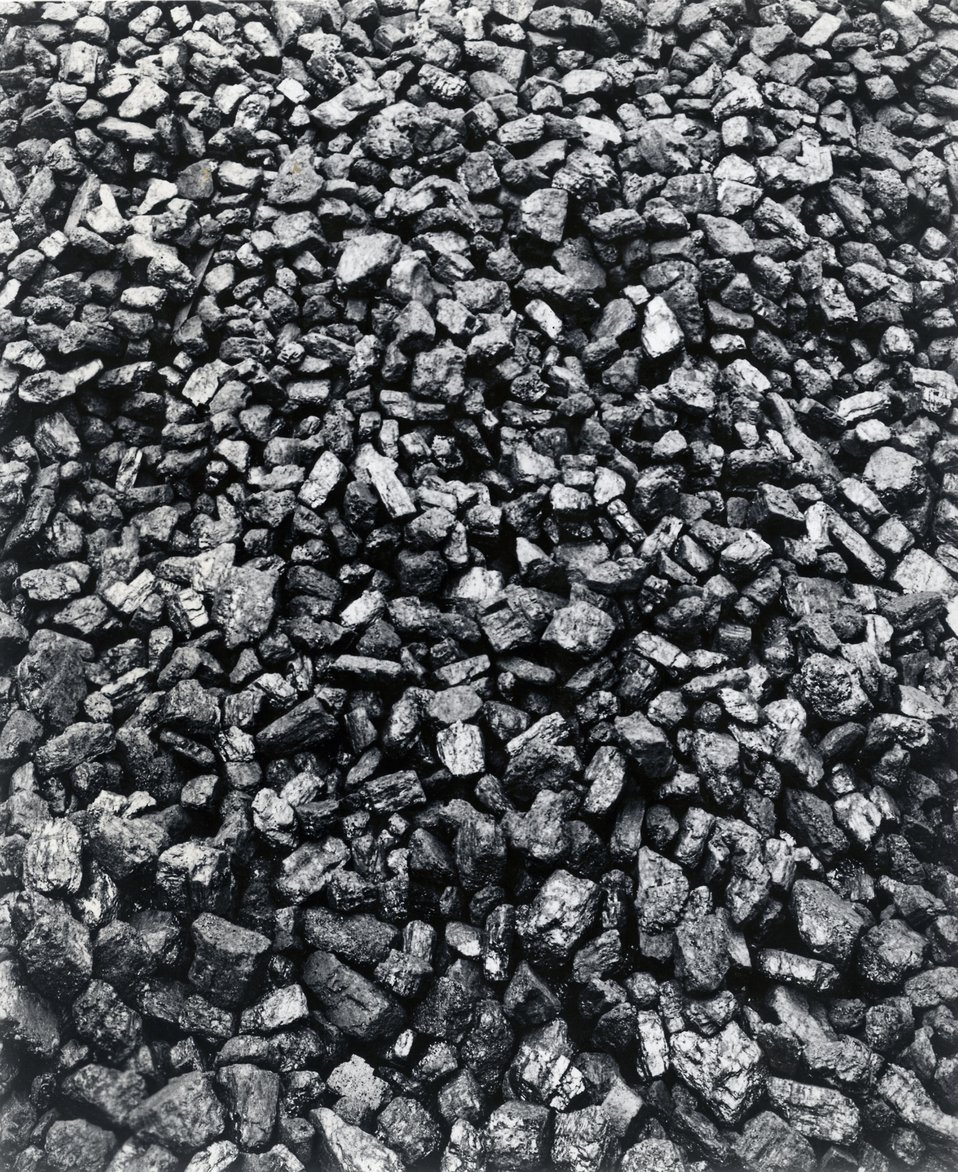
Miscellaneous -- Lumps of coal, received from West Virginia State Magazine Sept. 1950